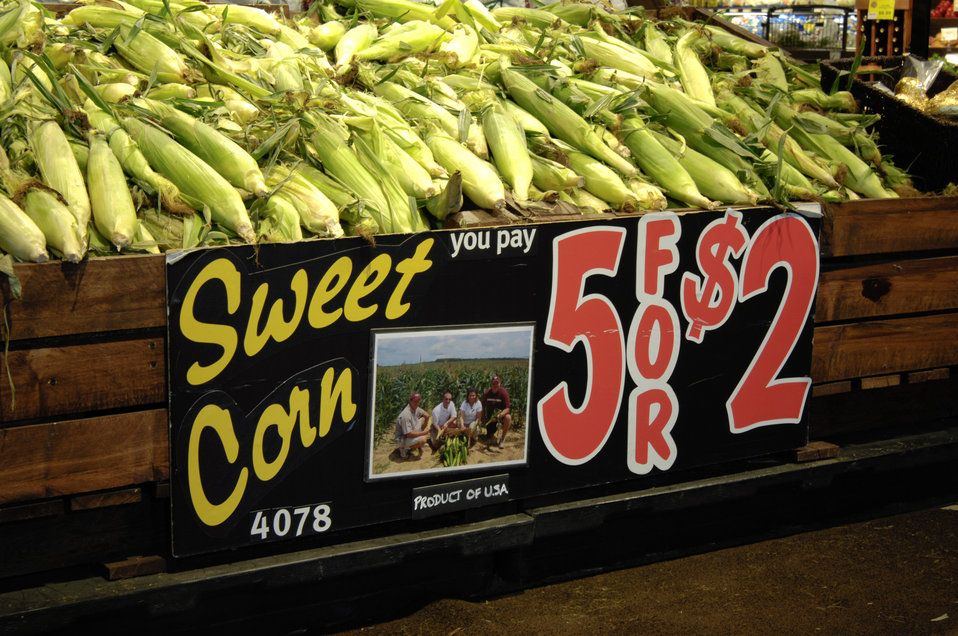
Sweet corn sold at Wegman’s Supermarket in Fredericksburg, Virginia on September 1, 2009 displays the required Country of Origin Label (COOL). COOL is a labeling law that requires retailer, such as full-line grocery stores, supermarkets, and club warehouse stores to notify their customers with information regarding the source of certain foods. Food products and covered commodities contained in the law include muscle cut and ground meats of beef, veal, pork, lamb, goat, and chicken; wild and farm-raised fish and shellfish; fresh and frozen fruits and vegetables; peanuts, pecans, and macadamia nuts; and ginseng. The U.S. Department of Agriculture (USDA) Agricultural Marketing Service (AMS) is responsible for the administration and enforcement of COOL.